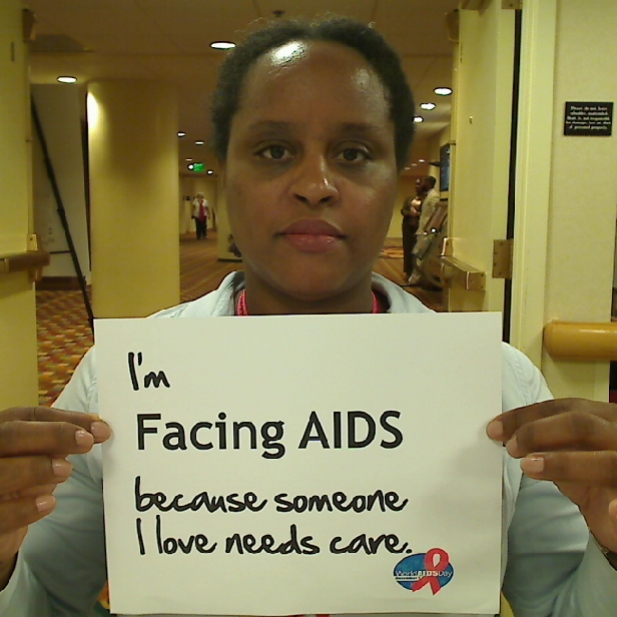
I'm Facing AIDS because someone I love needs care.